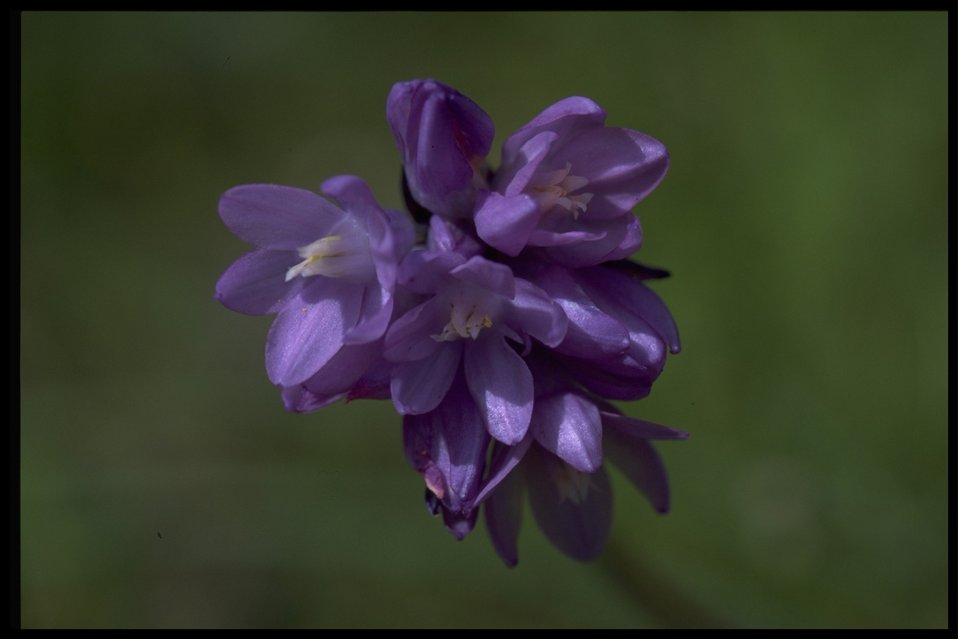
Closeup shot of Dichelostemma capitatum.